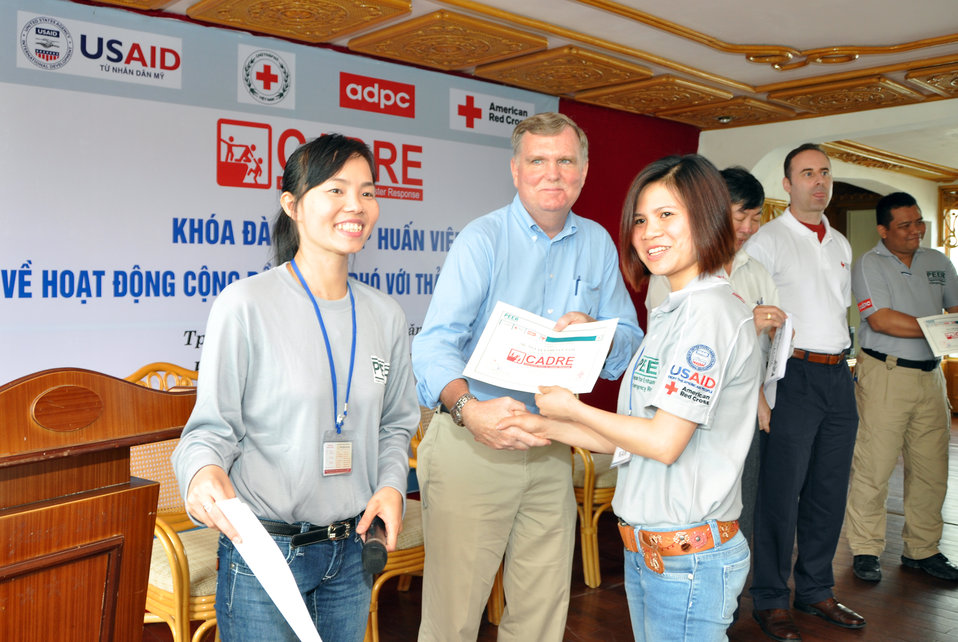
USAID Program Office Director Michael Foster awards certificates at the end of the training.